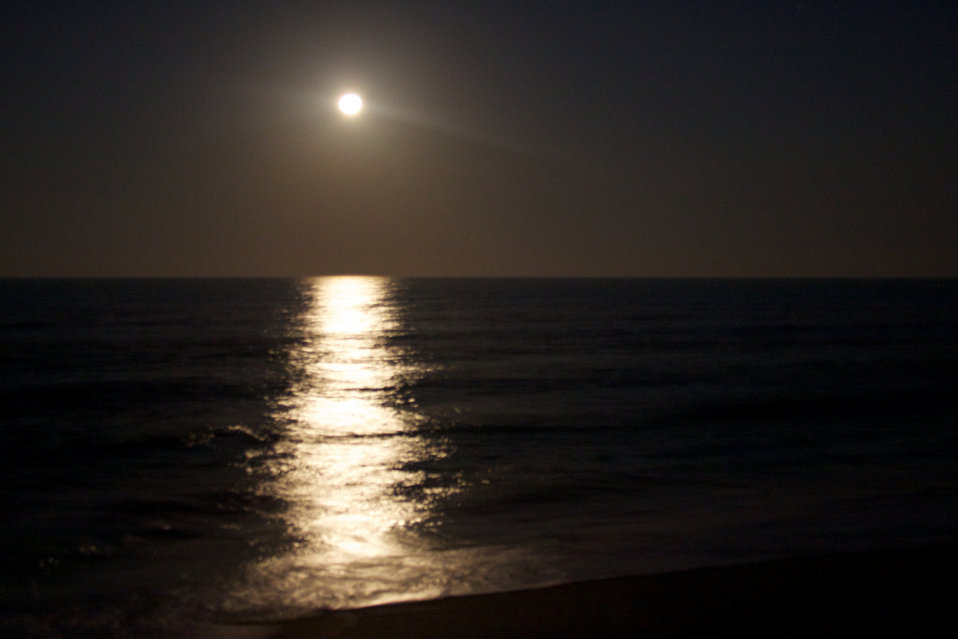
moonlight on the ocean

Archie Carr National Wildlife Refuge, FL